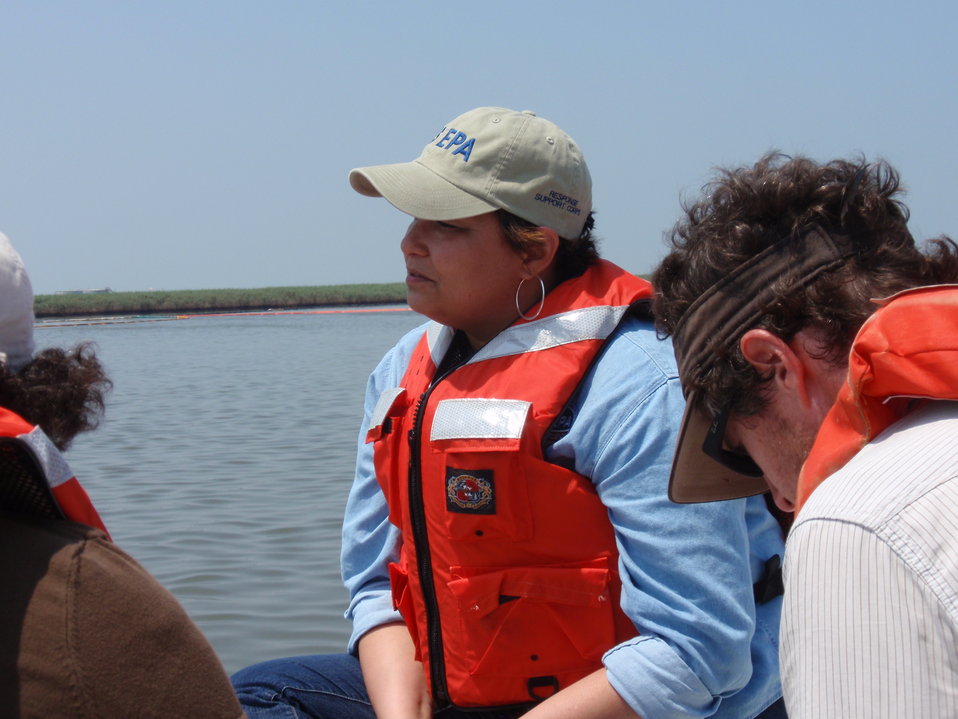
Taking it all in.

Administrator Jackson taking in some of the efforts on the water and coastline, a tiresome struggle in the response to the ongoing BP oil release. Boom stretches for miles as the government and BP work to control, contain and clean up the oil.